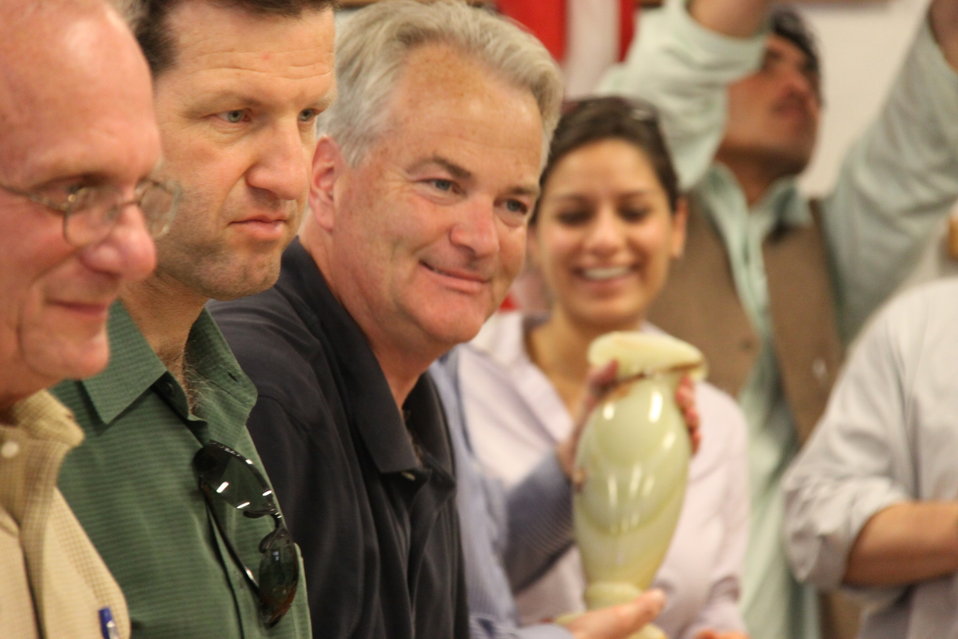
Meeting with Local Leaders in Kandahar